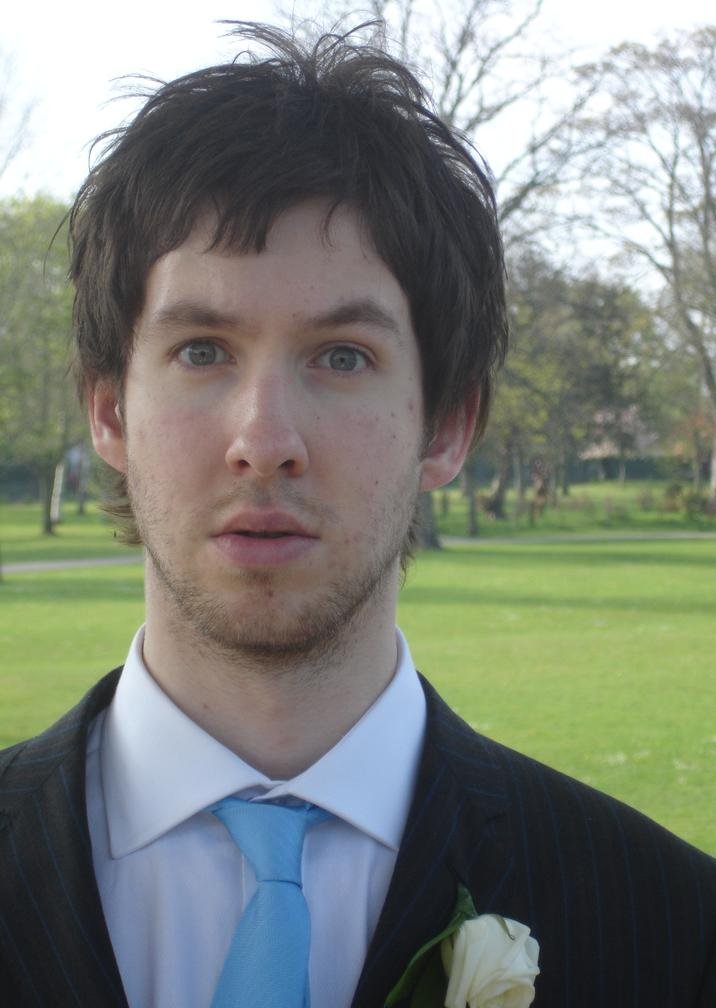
Calvin Harris, April 2007.